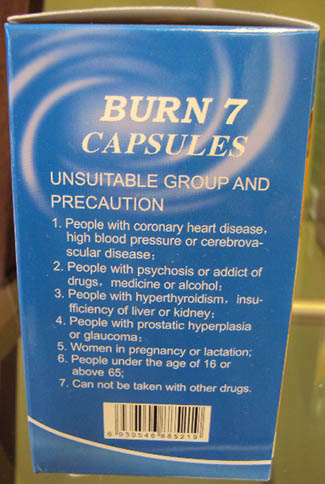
RECALLED – Dietary Supplement

December 23, 2013 – Product Recall – Deseo Rebajar Inc. Issues Voluntary Recall of Burn 7 Capsules Due to Undeclared Active Ingredient.